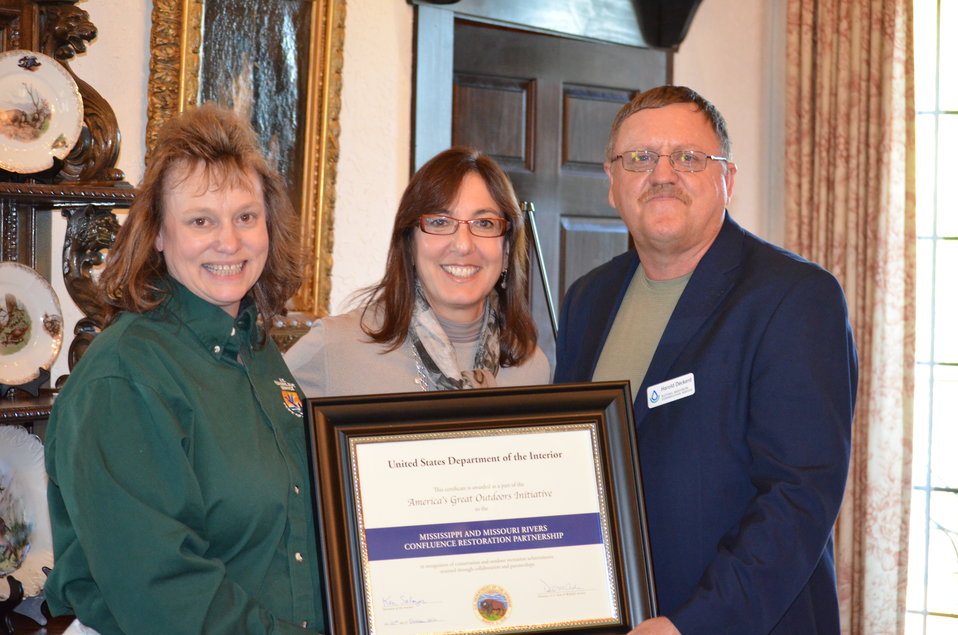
Honoring USDA Natural Resources Conservation Service

Award presented to Harold Decker, USDA Asst. State Conservationist for Water Resources for his agency's confluence conservation efforts. USDA Natural Resources Conservation Service is instrumental in providing onsite wetland design support. USFWS/Ashley Spratt